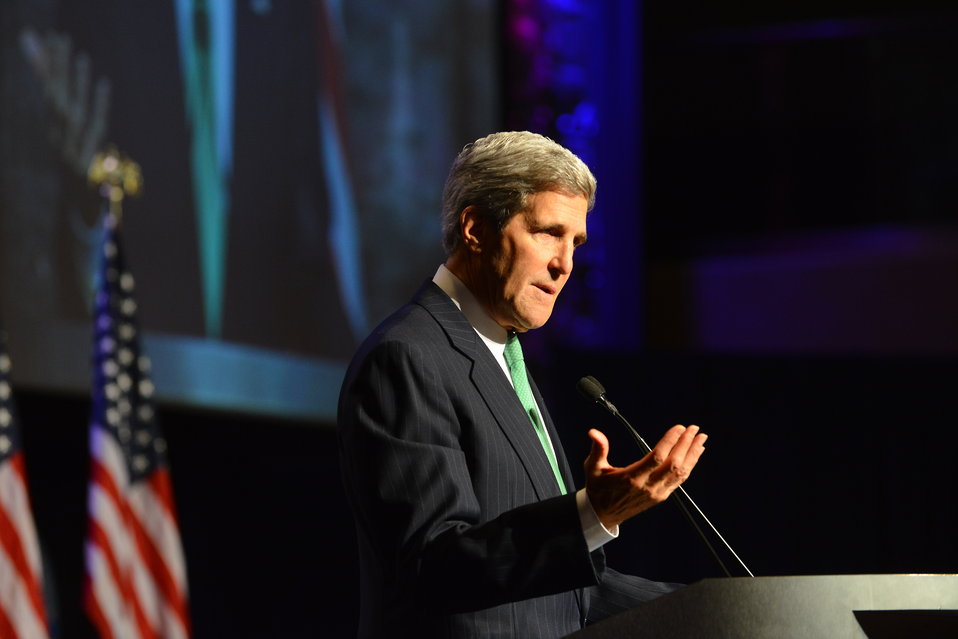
Secretary Kerry Delivers Remarks at the SelectUSA Investment Summit

U.S. Secretary of State John Kerry delivers remarks at the SelectUSA Investment Summit in Washington, D.C., on November 1, 2013.